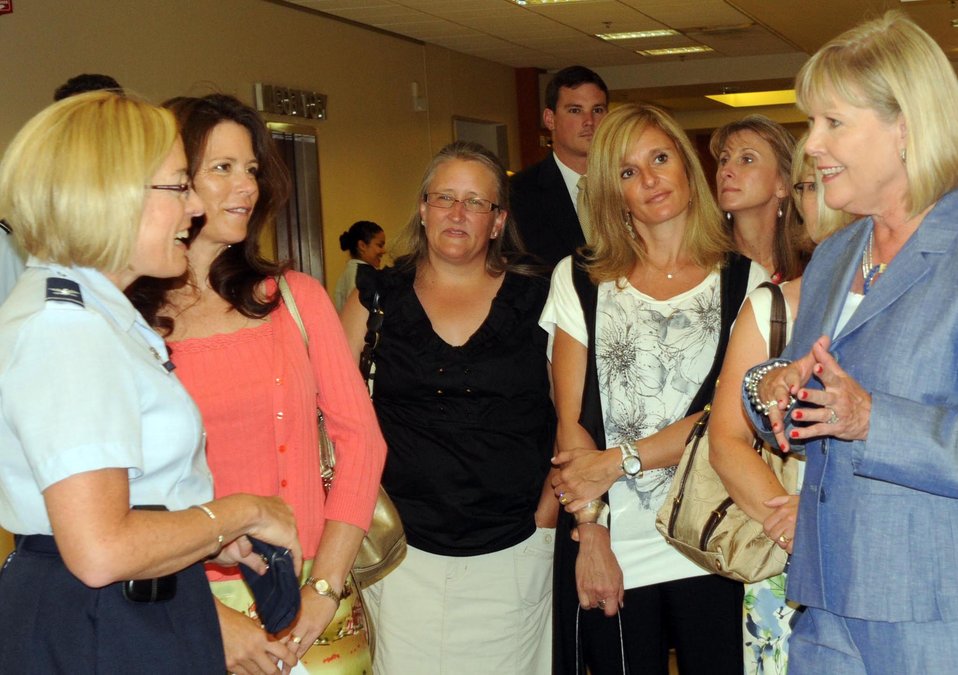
Chief of staff and spouse visit Aviano Air Base

Col. Linda Lawrence (left), the 31st Medical Group commander at Aviano Air Base, Italy, briefs Suzie Schwartz, wife of the Air Force Chief of Staff Gen. Norton Schwartz, on medical services at Aviano July 11, 2011. The general and his wife were visiting Aviano to meet with Airmen and their families and observe the installation’s mission.